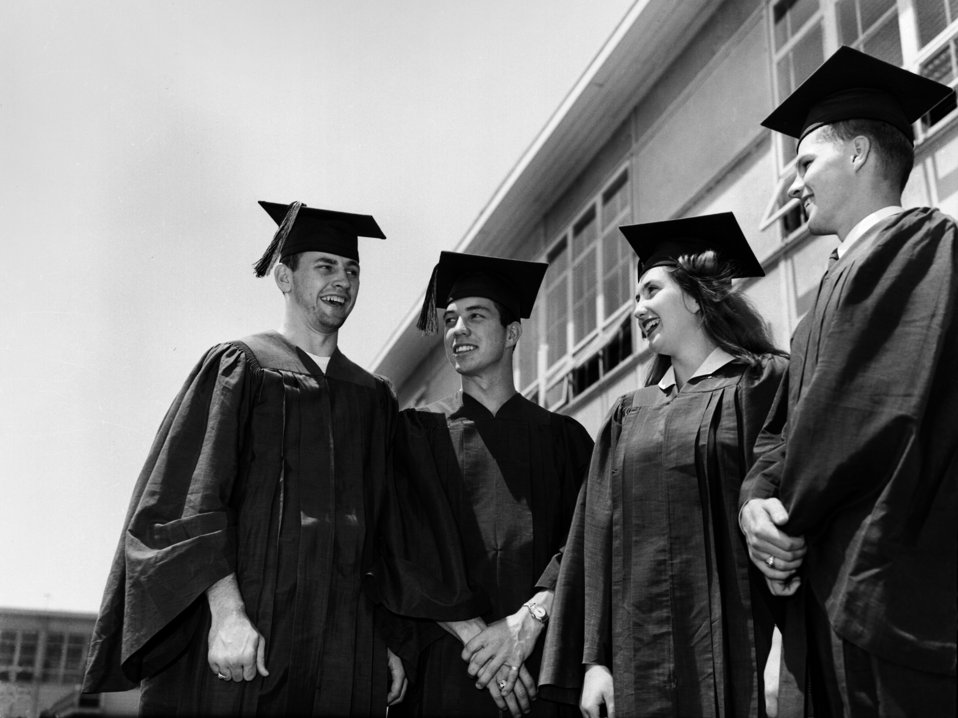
Oak Ridge High School Class Officers 1948

5018 DOE photo Ed Westcott 6-2-1948 Oak Ridge Tennessee